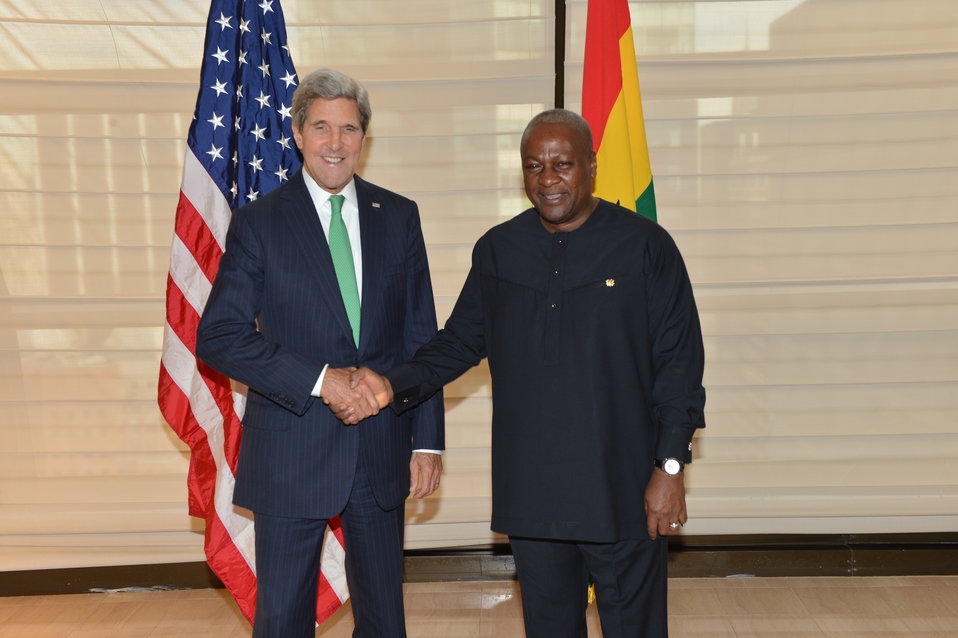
Secretary Kerry Meets With Ghanaian President Mahama

U.S. Secretary of State John Kerry holds a bilateral meeting with the President of Ghana John Mahama in New York City on September 25, 2013.